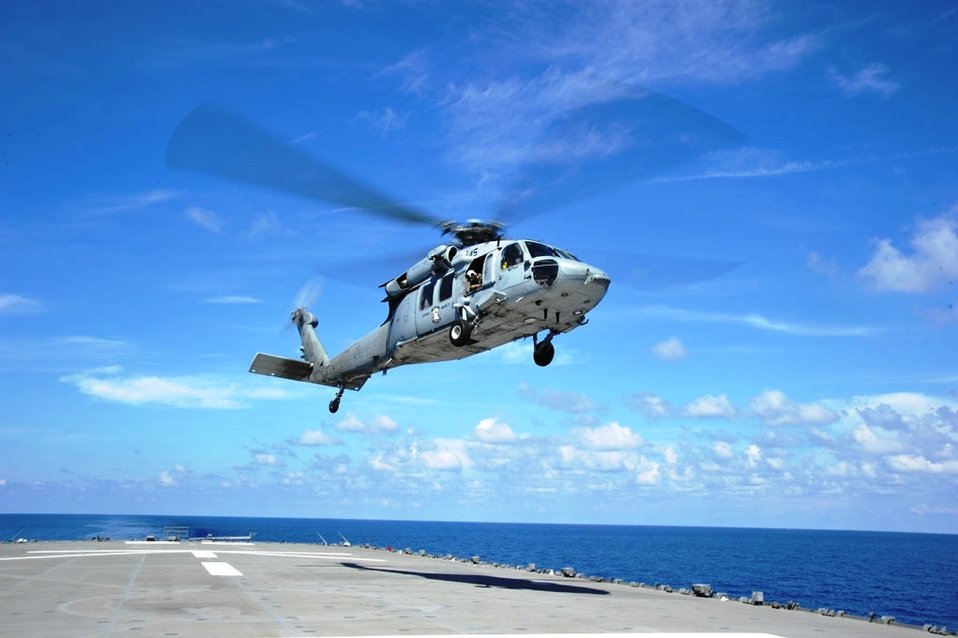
USNS Mercy Crew Member Takes Photo of Helicopter

A member of the USNS Mercy crew captures a photo of the JMSDF photographers riding in USNS Mercy's helicopter on June 14, 2010, in the Pacific Ocean off the coast of Southeast Asia.